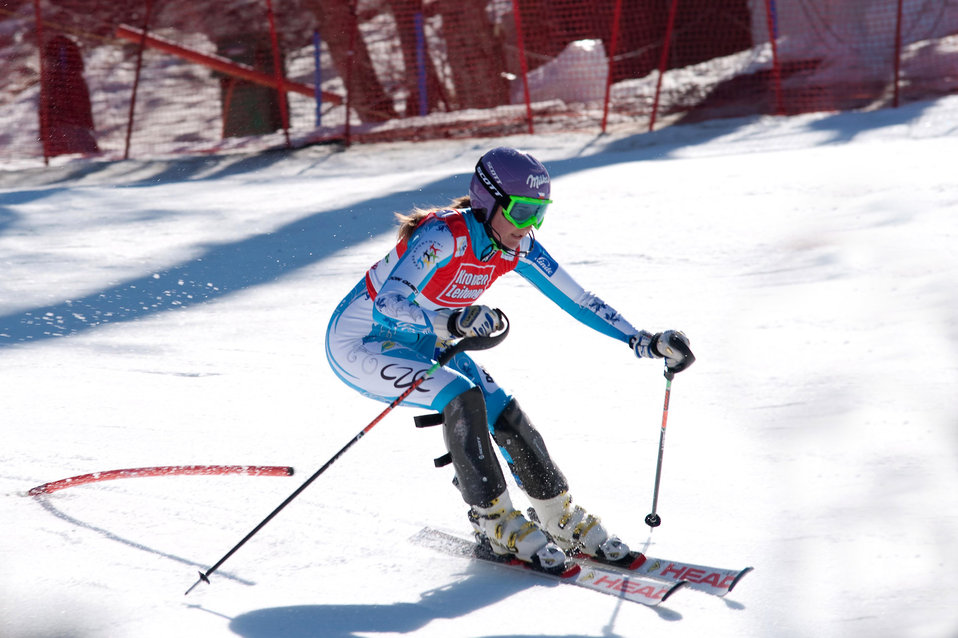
Schladming world cup 2012

Sarka zahrobska.